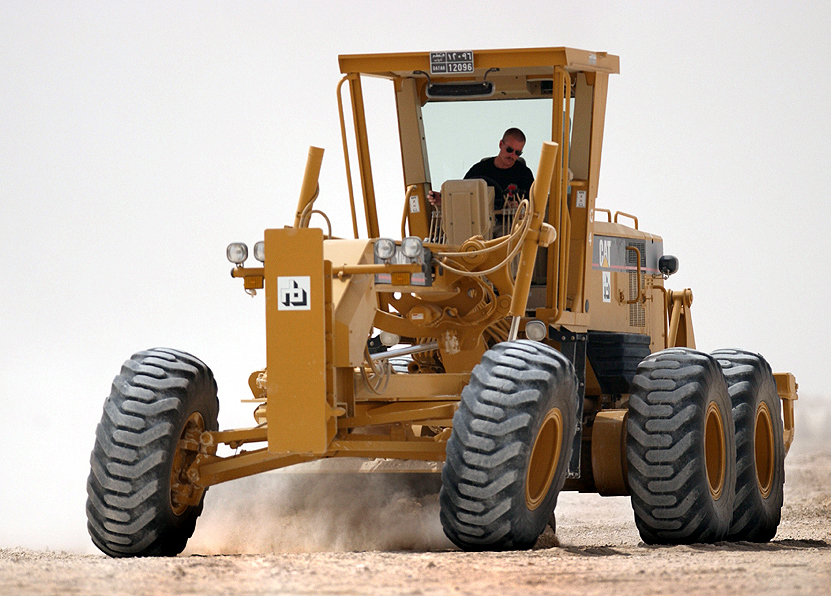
Making the grade

OPERATION IRAQI FREEDOM -- Staff Sgt. Robert Dalton grades dirt to level an area for an industrial warehouse at a forward-deployed base in Southwest Asia. Dalton is a heavy-equipment operator assigned to the 379th Expeditionary Civil Engineer Squadron.